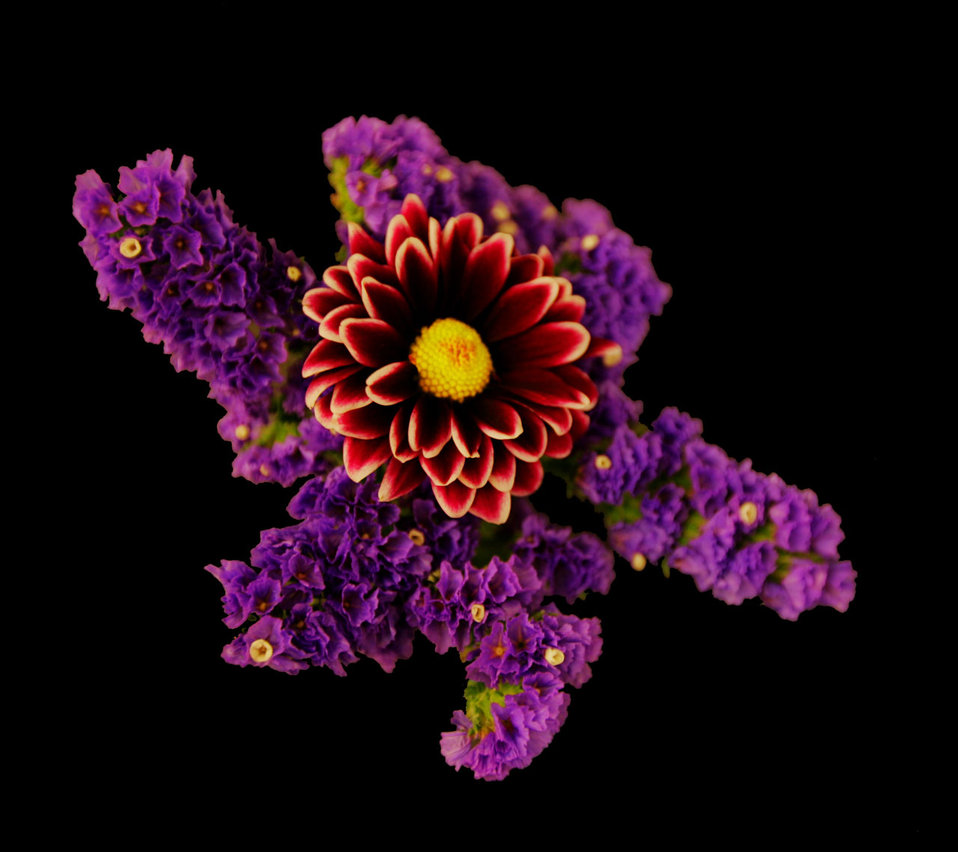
Purple explosion

Flowers in hdr and and color corrected with photoshop..